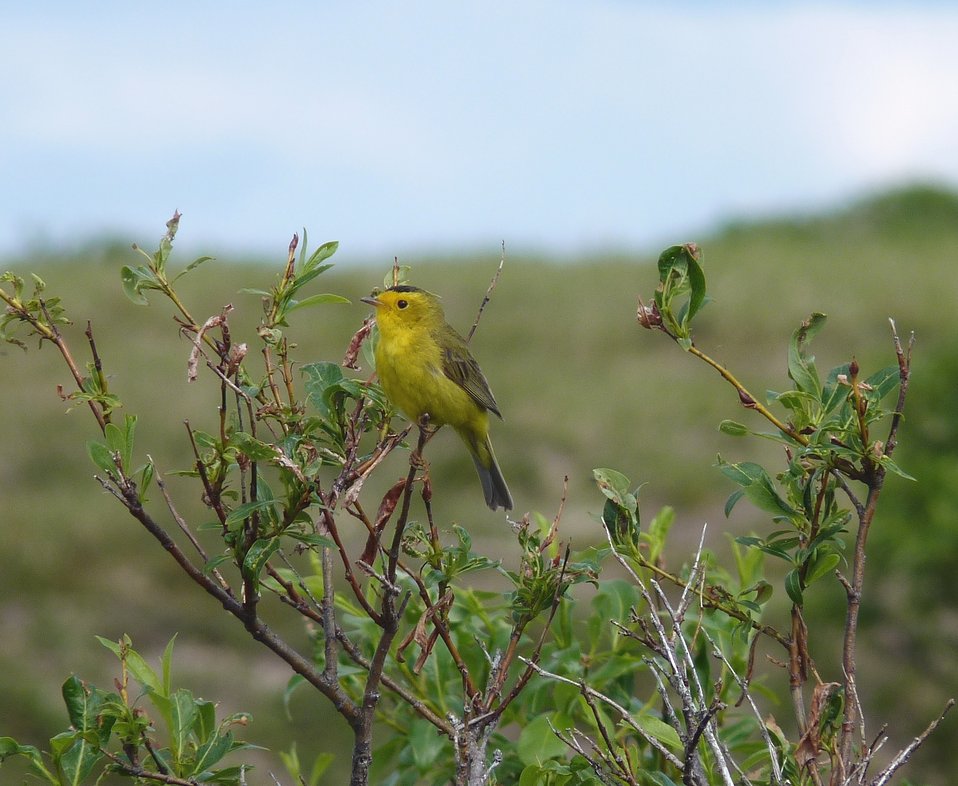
Wilson's warbler

Andreafsky wilderness, Yukon Delta National Wildlife Refuge